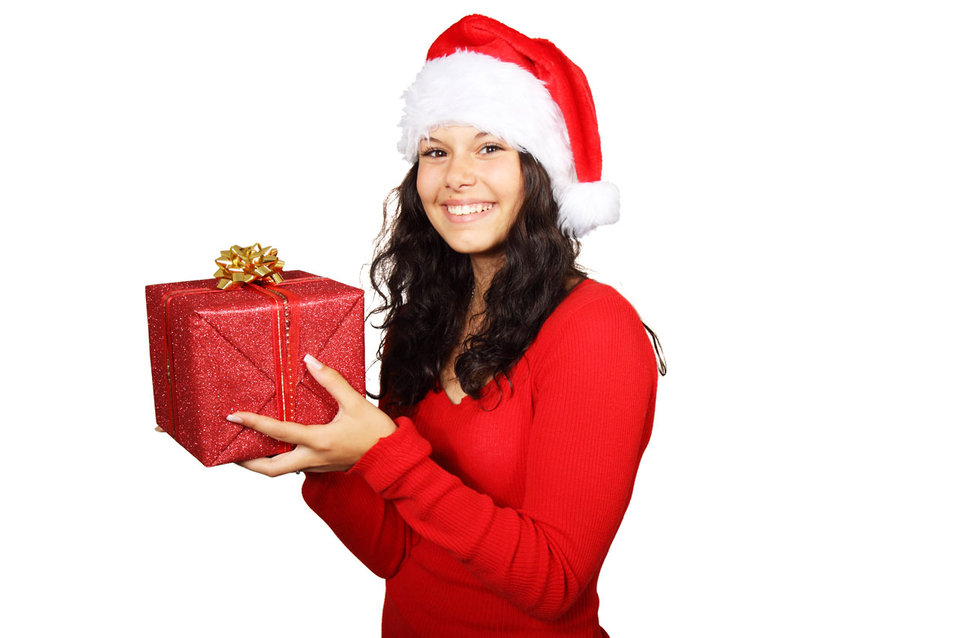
Santa girl and christmas gift

Santa claus girl holding a christmas gift.